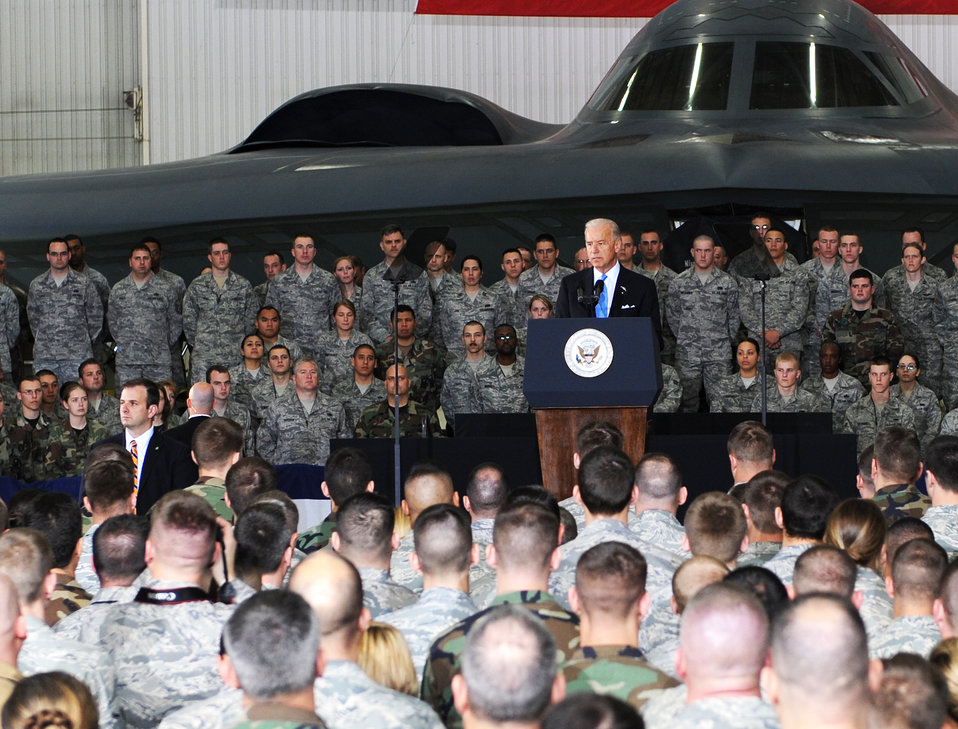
Vice president visits Whiteman

Vice President Joe Biden addresses the troops during a visit to Whiteman Air Force Base, Mo., April 16. He was there to show the administration's support for the troops. Mr. Biden later visited Jefferson City and the University of Missouri-St. Louis to highlight progress of the Recovery Act.